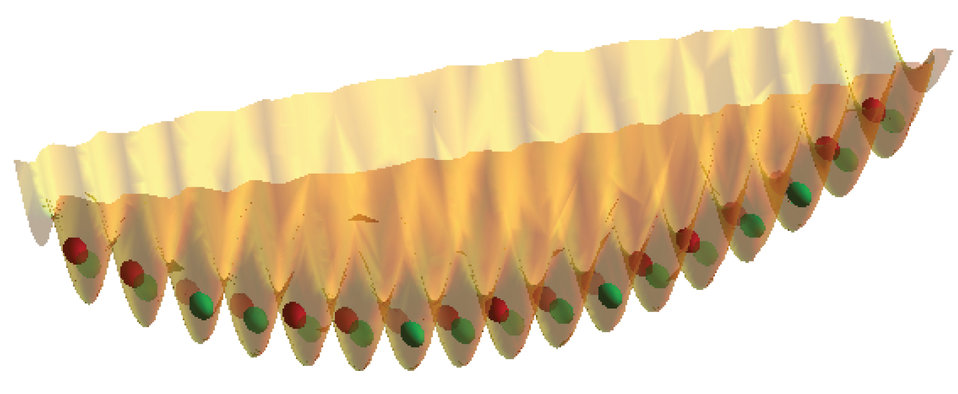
Ultracold physics; BEC; Supersolid theory

Artistic rendition of a supersolid made from two different types of ultracold atoms. The atoms are arranged in a regularly repeating pattern like a solid, but also can move frictionlessly like a superfluid. Yellow shape represents the electrical forces that the atoms feel, which vary in a regular pattern. Correspondingly. the density of the atoms (represented by the thickness of the spheres) also varies in a periodic fashion.